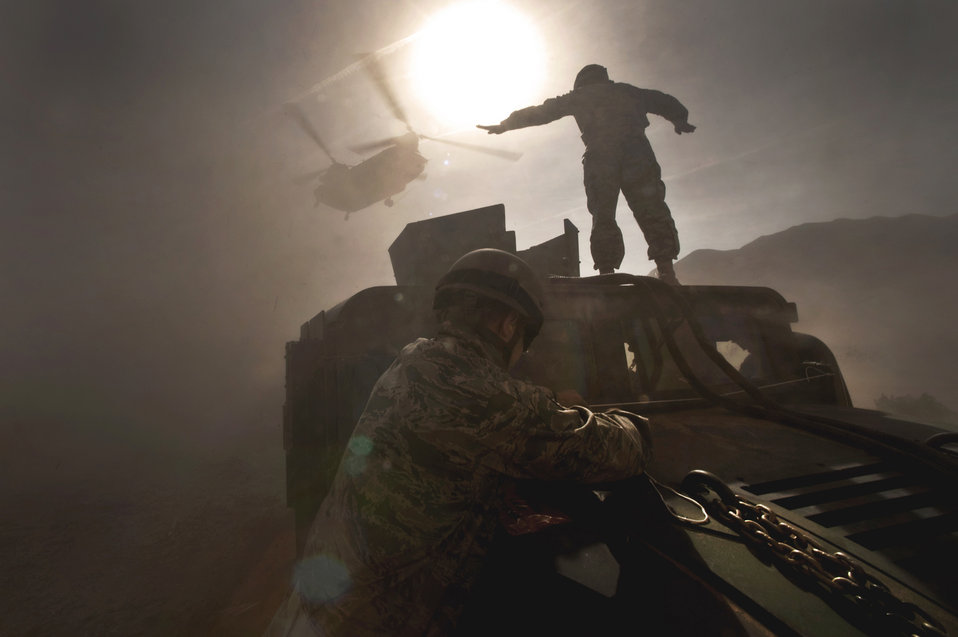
Airmen and Soldiers conduct airdrop and sling-load training

Army Staff Sgt. Hector Hoyas and Senior Airman Matthew Phillips turn away as a CH-47 Chinook helicopter takes off with a HUMVEE sling-load April 15, 2011, as part of airdrop and sling-load training at Nellis Air Force Base, Nev. Sergeant Hoyas is an aerial delivery field service instructor from Fort Lee, Va. Airman Phillips is an airborne pavements and equipment operator assigned to the 820th RED HORSE squadron.